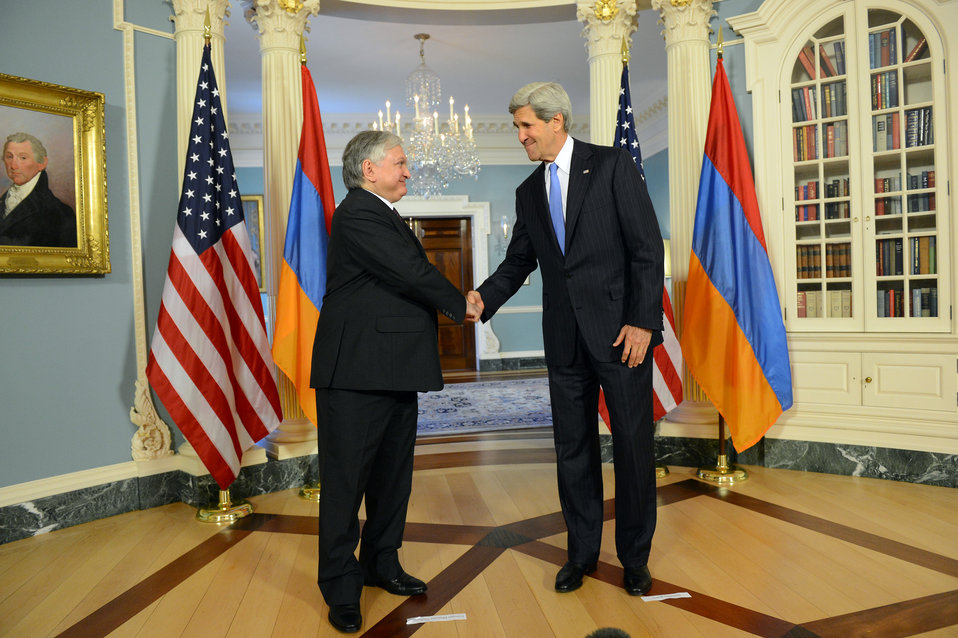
Secretary Kerry Shakes Hands With Armenian Foreign Minister Nalbandian

U.S. Secretary of State John Kerry shakes hands with Armenian Foreign Minister Edward Nalbandian before their bilateral meeting at the U.S. Department of State in Washington, D.C., on June 4, 2013.